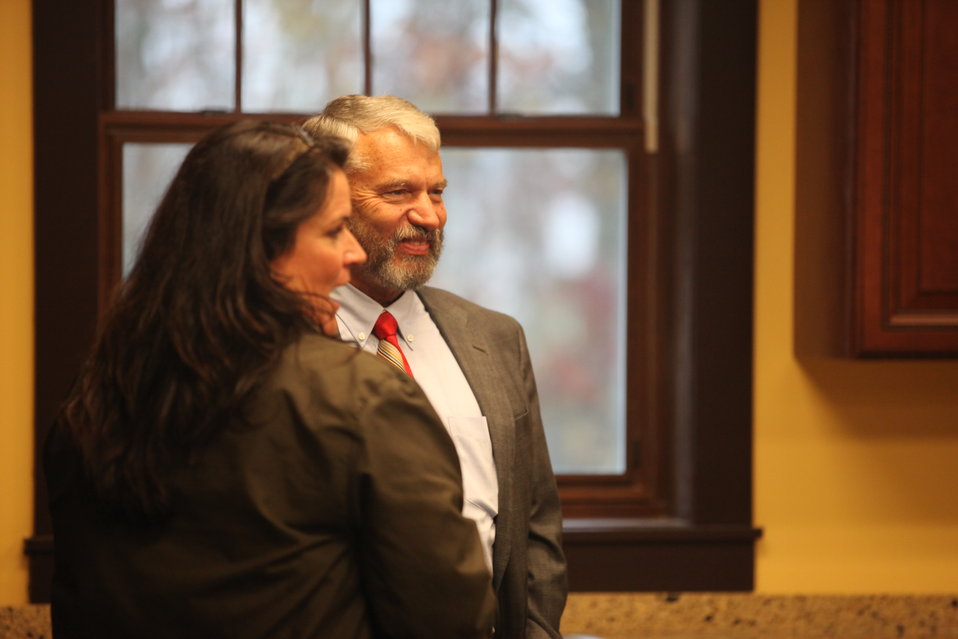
USFWS Deputy Director of Operations Rowan W. Gould

We were honored to have Deputy Director Rowan Gould as one of the keynote speakers at the Visitor Center Ribbon Cutting Ceremony. We also learned that his uncle lived just around the corner from the new Visitor Center site and Rowan has spent many hours on the refuge as a visitor in the past!